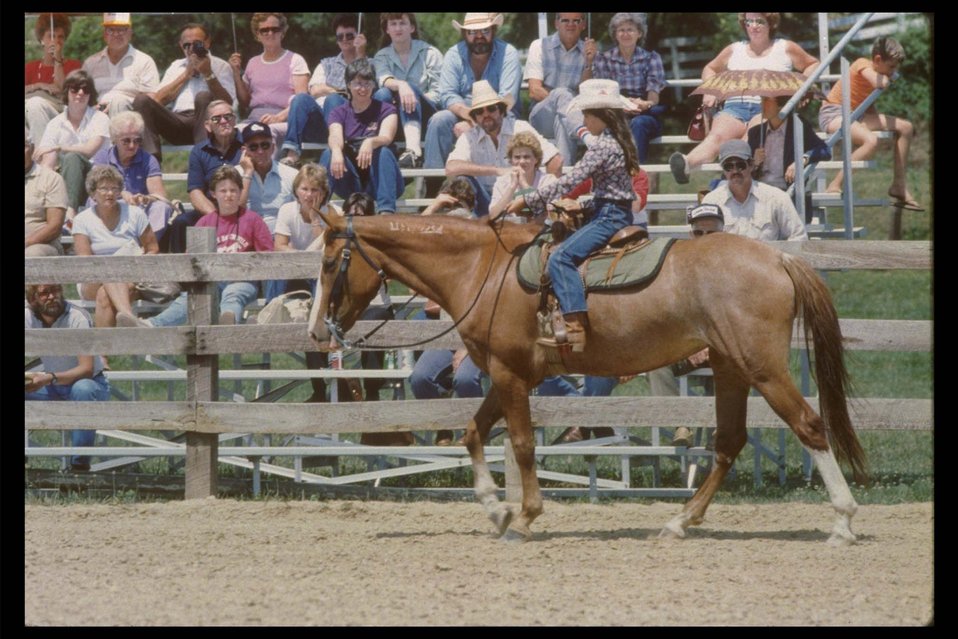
Horse adopter riding a wild horse in competition.